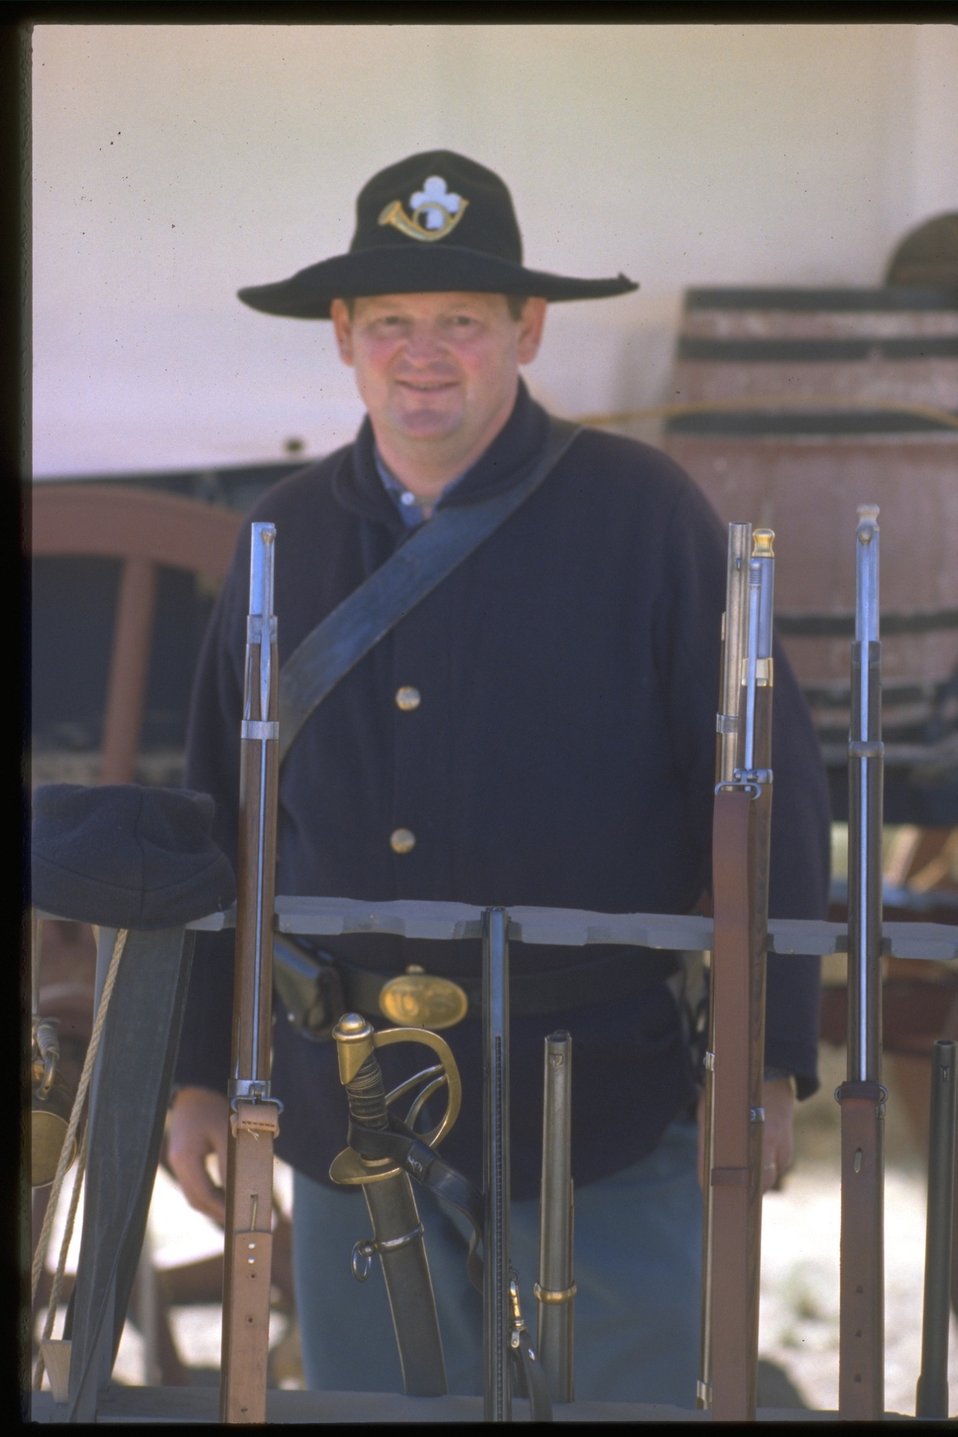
Pioneer festival scene--a soldier.